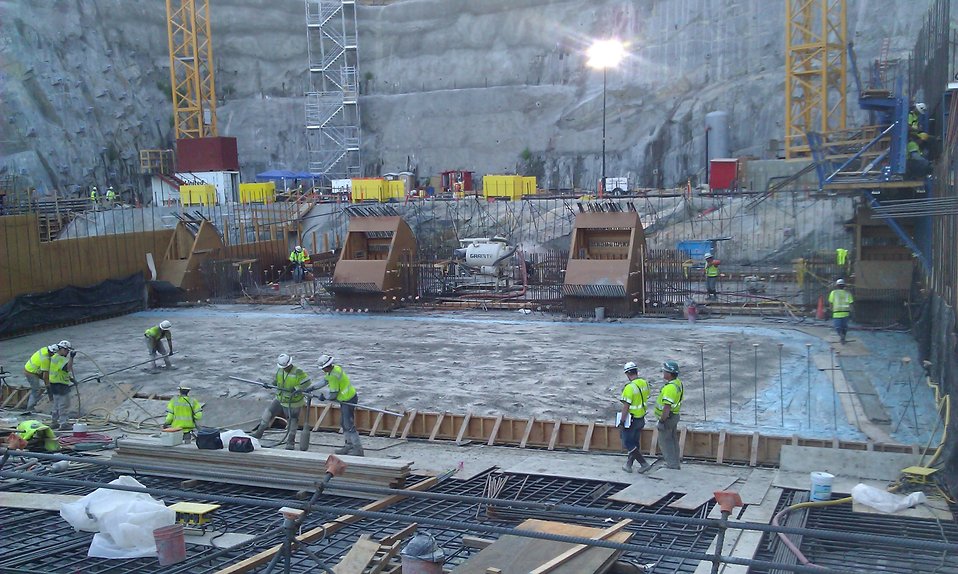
Nighttime concrete placement at Folsom spillway

The U.S. Army Corps of Engineers Sacramento District works at night during concrete placement for the auxiliary spillway at the Folsom Dam Joint Federal Project in Folsom, Calif., June through August 2012. The work is being done at night when temperatures are lowest, aiding the concrete’s cure. The district is building the auxiliary spillway in cooperation with the U.S. Bureau of Reclamation, the state’s Central Valley Flood Protection Board and the Sacramento Area Flood Control Agency to improve the safety of the existing Folsom Dam in Folsom, Calif., and reduce flood risk for the greater Sacramento area. (U.S. Army courtesy photo/Released)